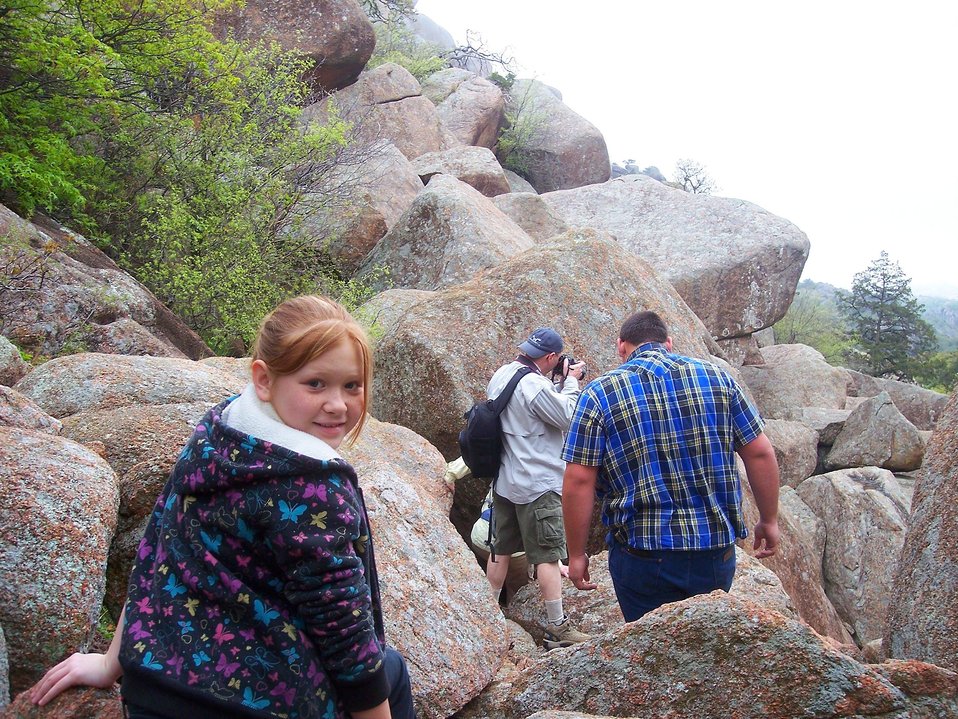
Charon's Garden Trail4, Wichita Mountains Refuge

Wichita Mountains National Wildlife Refuge, Oklahoma.